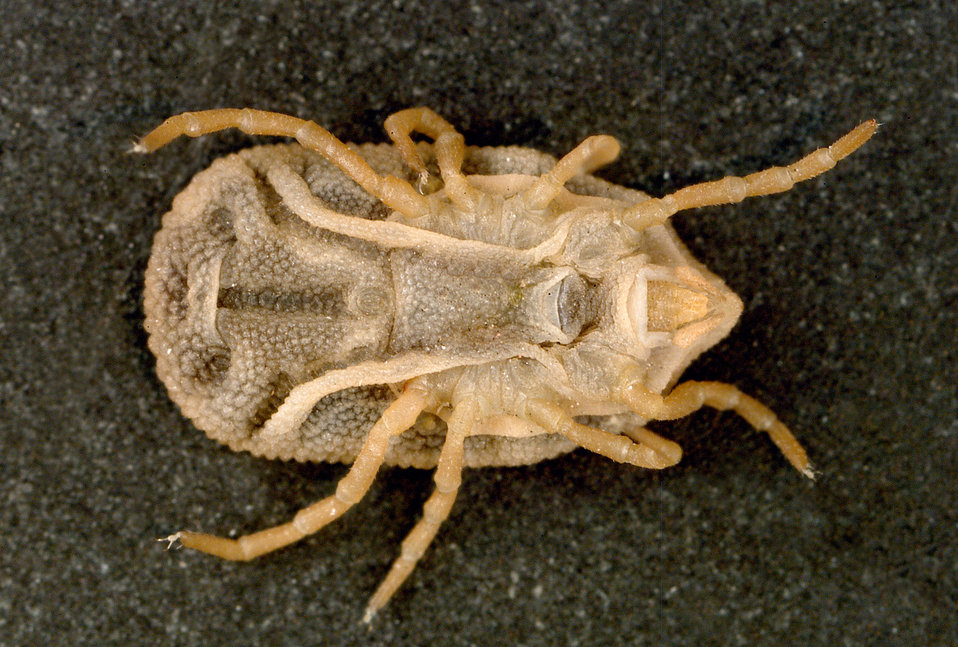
This is a ventral view of the 'soft tick' Carios kelleyi, formerly Ornithodoros kelleyi, or the 'Bat Tick'.